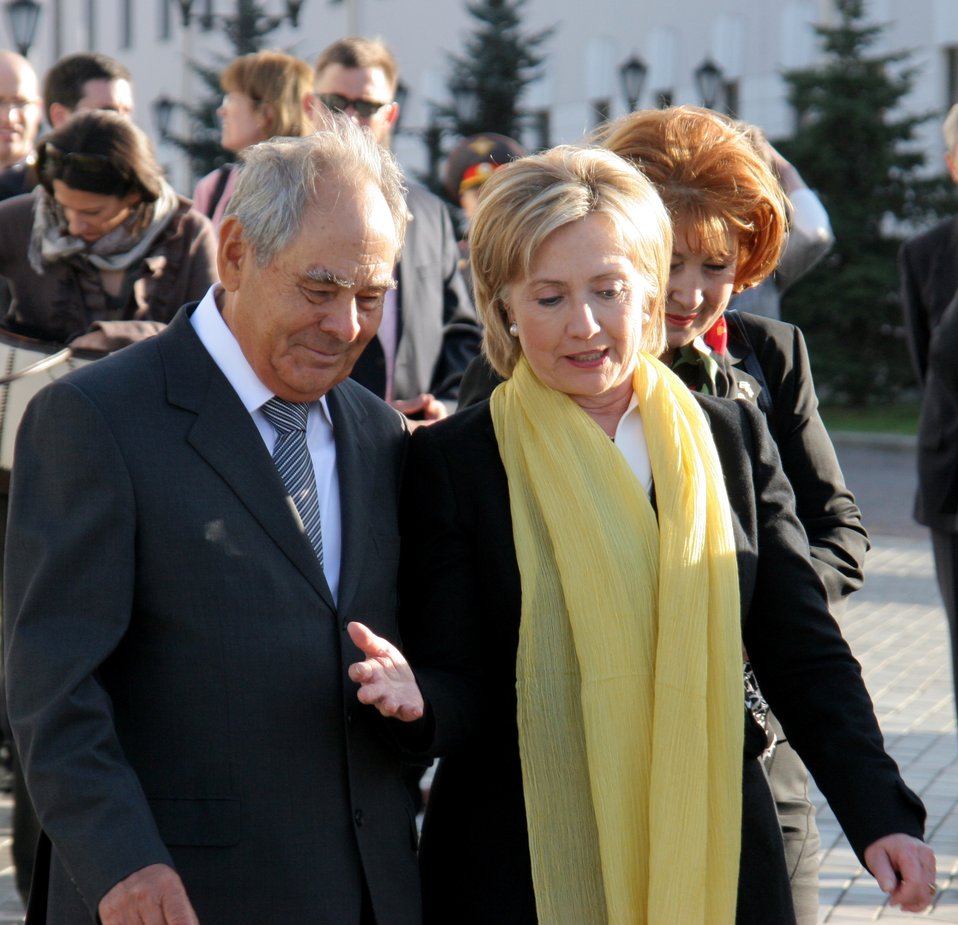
Secretary Clinton With Tatarstlights a candle in the Assumption Cathedral of Kazanan President Mintimer Shaimiev

U.S. Secretary of State Hillary Rodham Clinton and Tatarstan President Mintimer Shaimiev discuss current events in Kazan, Russia October 14, 2009.